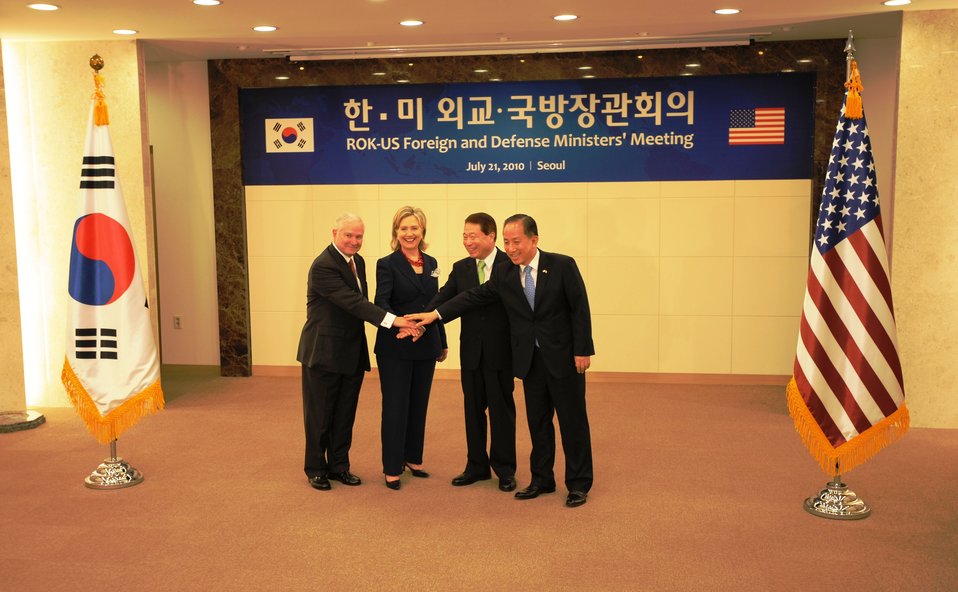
Secretary Gates, Secretary Clinton, Republic of Korea Foreign Minister Yu Myung-hwan, and Republic of Korea Defense Minister Kim Tae-young Show Solidarity

U.S. Secretary of Defense Robert M. Gates, U.S. Secretary of State Hillary Rodham Clinton, Republic of Korea Foreign Minister Yu Myung-hwan, and Minister of Defense Kim Tae-young show solidarity before the inaugural 2 2 Meetings between the United States and the Republic of Korea in Seoul, Republic of Korea, on July 21, 2010.